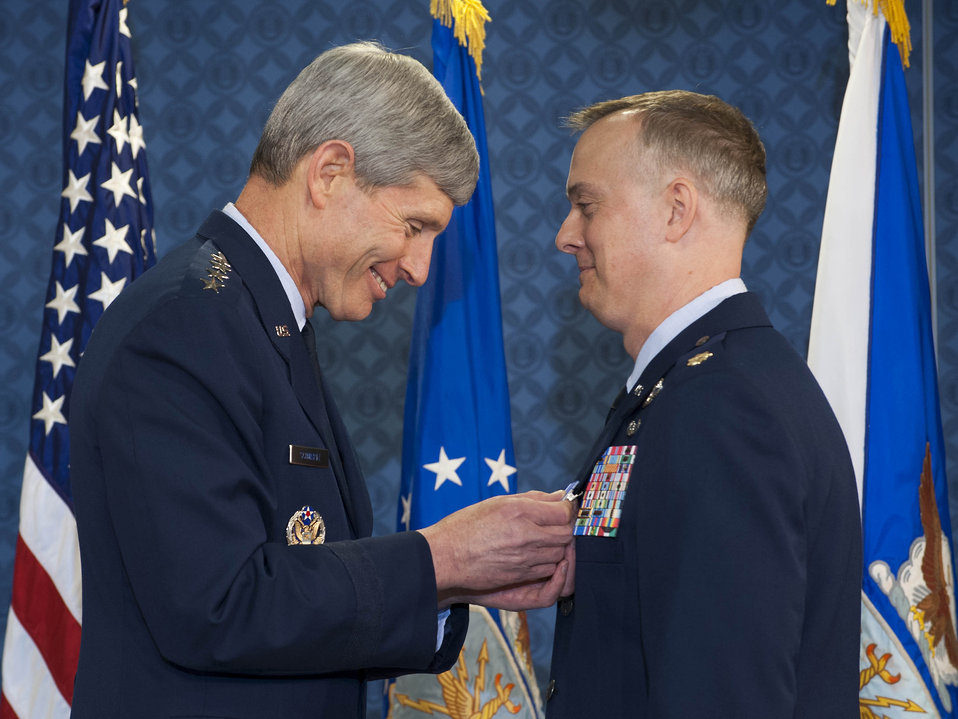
CSAF presents Distinguished Flying Cross

Air Force Chief of Staff Gen. Norton Schwartz (left) presents the first of two Distinguished Flying Cross with Valor medals to Maj. John Creel during a ceremony in the Pentagon on May 18, 2012.